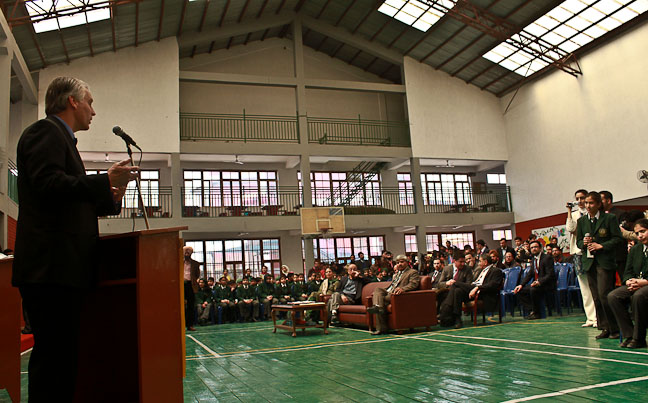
Ambassador Roemer Visits Jammu and Kashmir

U.S. Ambassador to India Timothy J. Roemer visits Jammu and Kashmir, March 17-18, 2011, to engage and listen to the people and connect with the youth of the state.